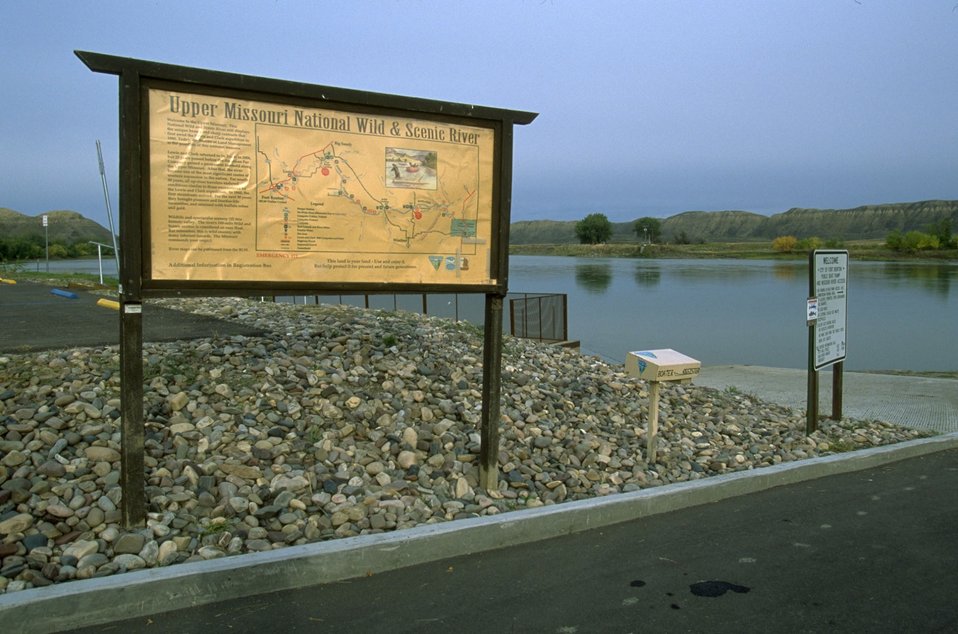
Boat launch at Fort Benton